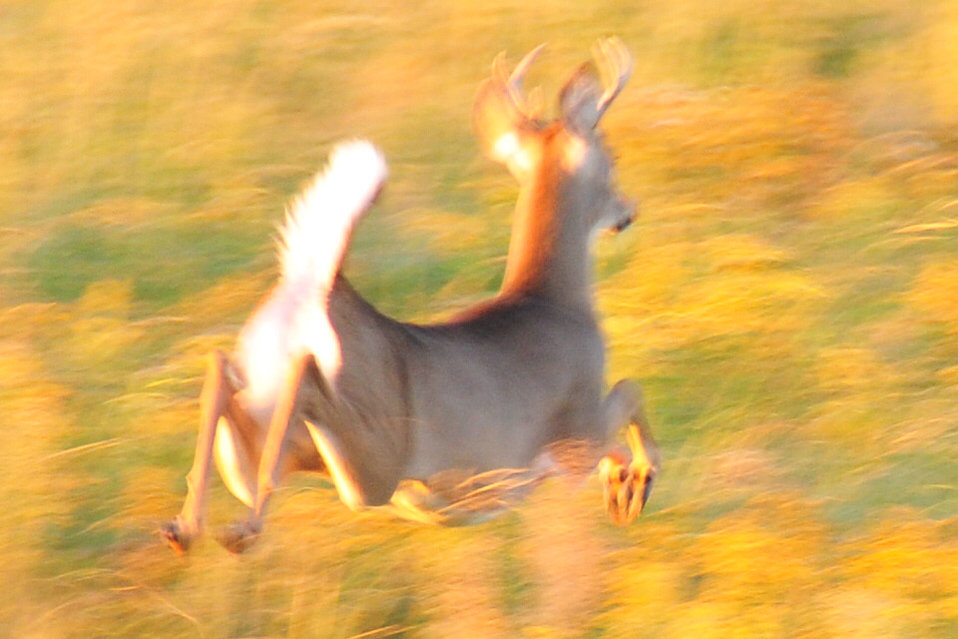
White-tailed Deer Running

A white tailed deer runs for cover during the last light of the day.